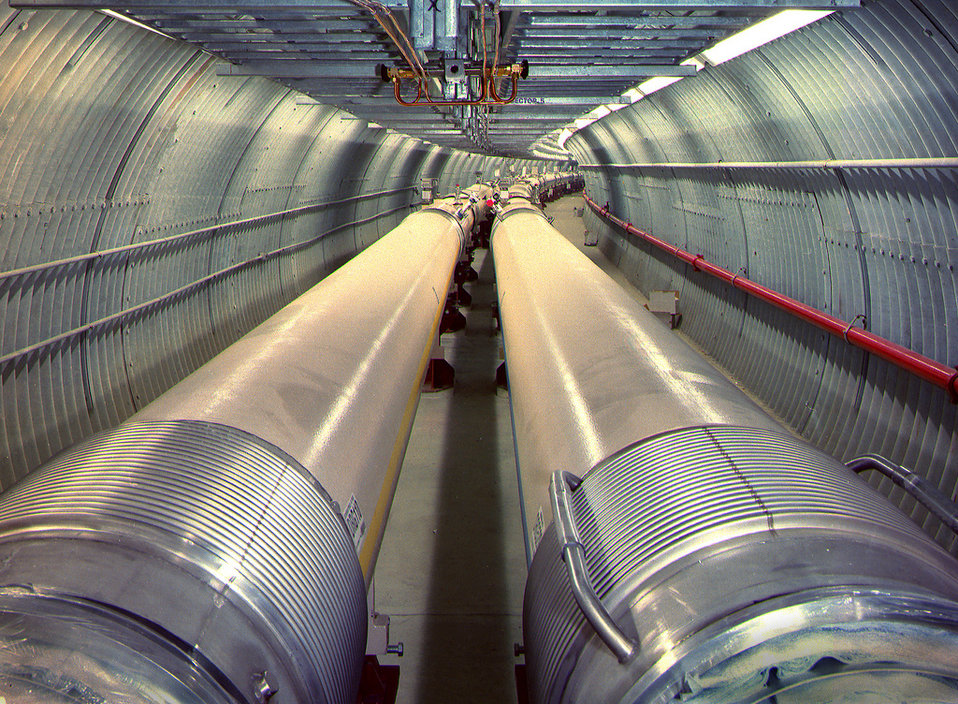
Brookhaven National Laboratory's Relativistic Heavy Ion Collider (RHIC) is really two accelerators in one-made of crisscrossing rings of superconducting magnets, enclosed in a tunnel 2.4 miles in circumference.